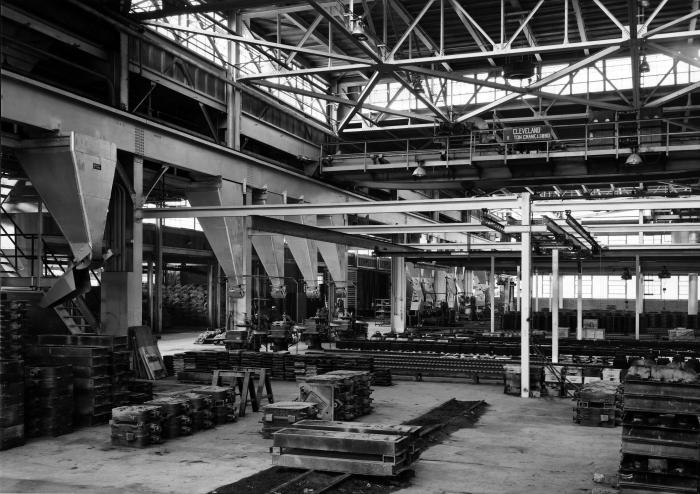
This historical photograph was provided by the Center for Disease Control's (CDC), National Institute for Occupational Safety and Health (NIOSH). The image depicted the layout of the main floor in the Electro-Alloys Division chemical plant in Elyria, Ohio. The building's work area appeared to be clean, and well-lighted. In industrial settings such as this, plant workers can be exposed to potential respiratory health hazards, especially when working in a chemical industry setting.